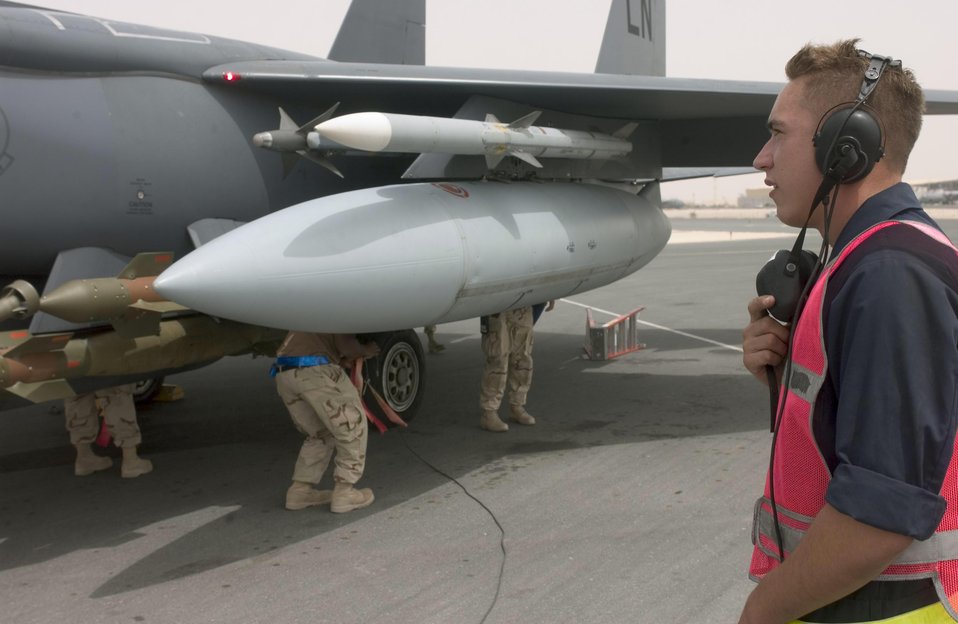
A final look

SOUTHWEST ASIA -- Senior Airman Jarek Rostkowski talks with an F-15E Strike Eagle pilot while weapons specialists perform a final inspection before takeoff. Airman Rostkowski is a crew chief with the 379th Expeditionary Aircraft Maintenance Squadron at a forward-deployed location. He is deployed from Royal Air Force Lakenheath, England.